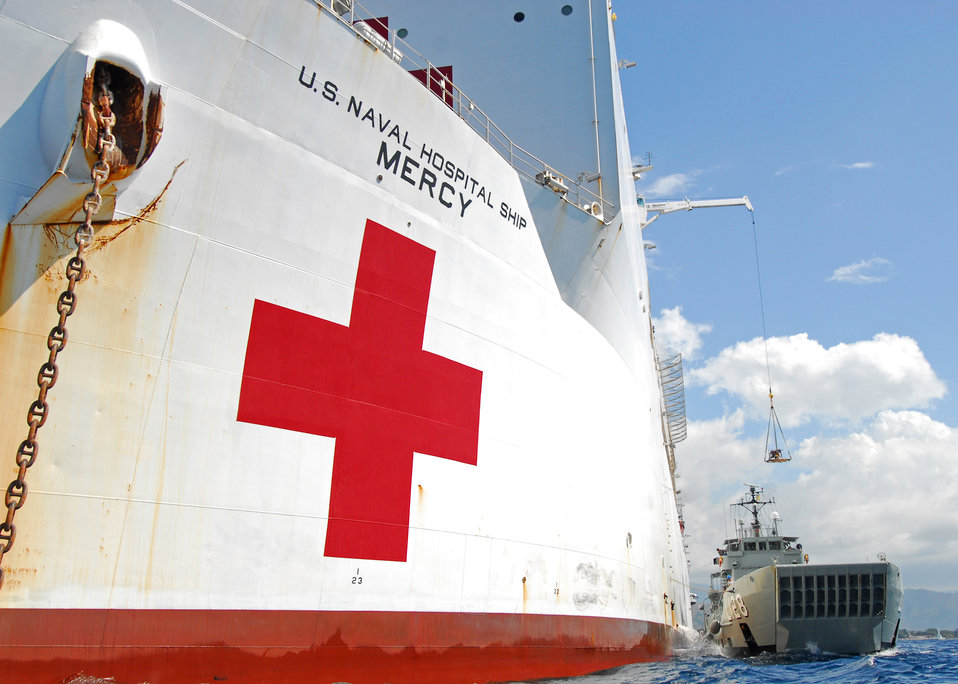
The Military Sealift Command hospital ship USNS Mercy (T-AH 19) loads cargo aboard the Royal Australian Navy Heavy Landing Craft, HMAS Labuan (L128) while anchored near Dili, Timor-Leste, in support of Pacific Partnership 2010 (PP10) on August 10, 2010. PP10 is the fifth in a series of annual U.S. Pacific Fleet humanitarian and civic assistance endeavors to strengthen regional partnerships.